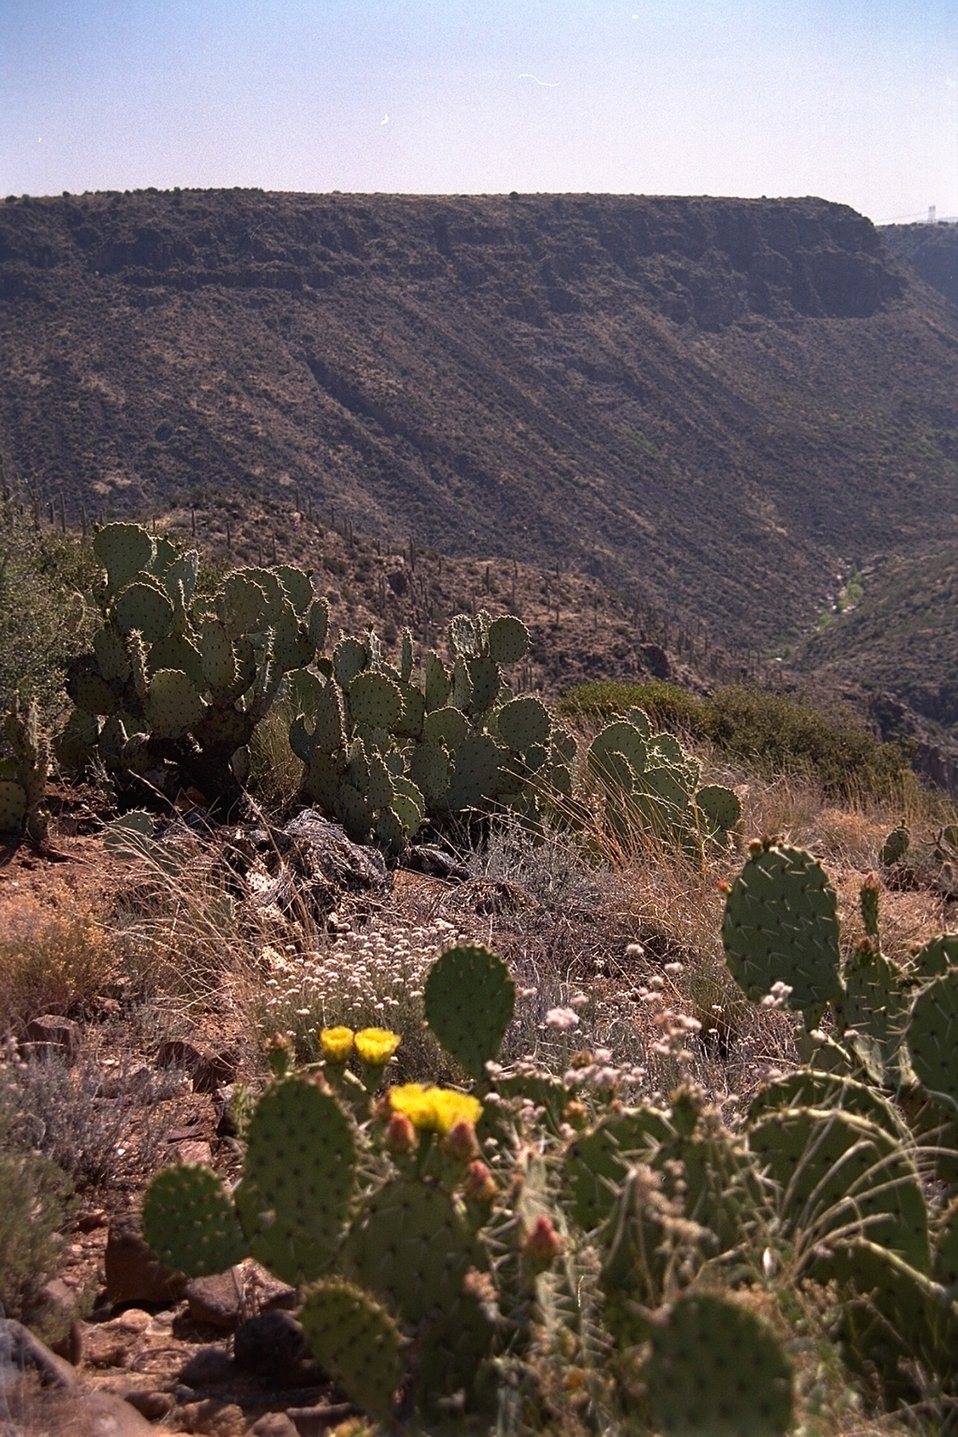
Prickly Pear Cactus in bloom in the foreground and the Agua Fria Canyon in the background.